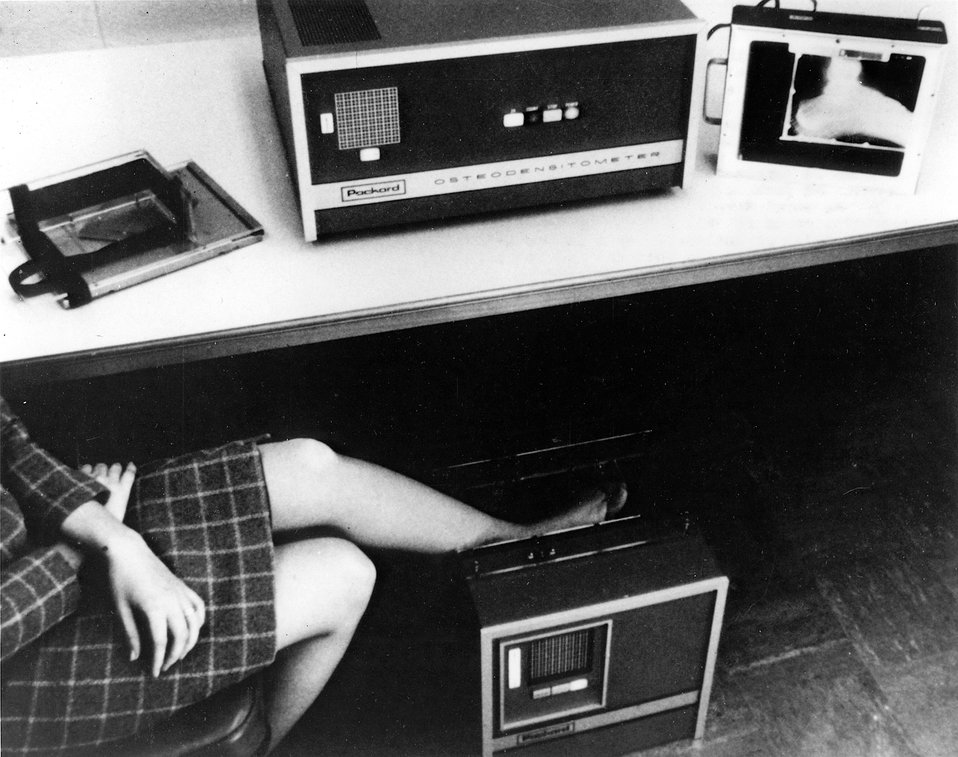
An instrument developed at Argonne to measure the changes of calcium content in bones.
c.1971